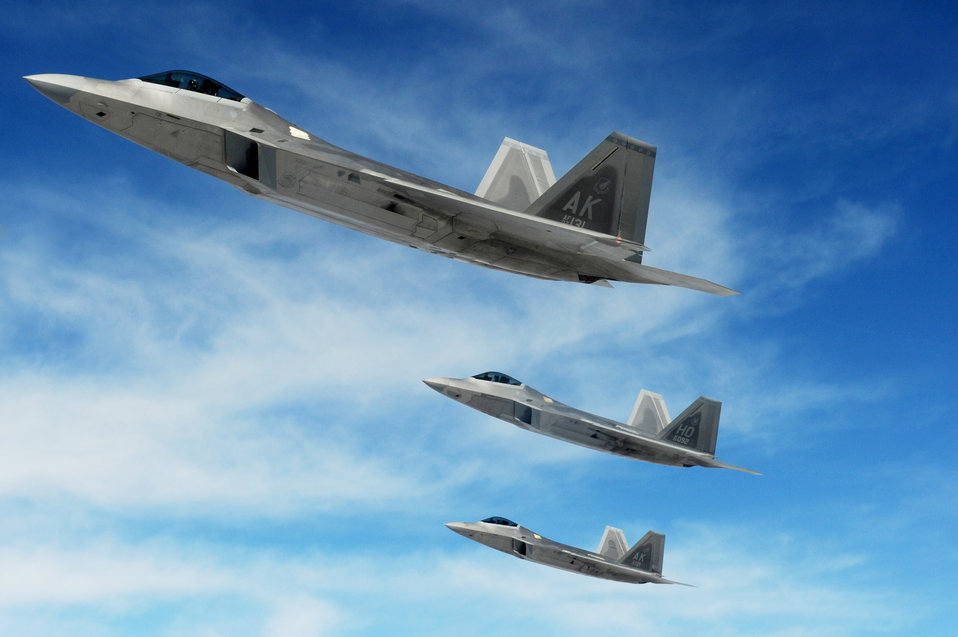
Raptors reign at Red Flag

A three-ship formation of F-22 Raptors flies to the Nevada Test and Training Range Feb. 4, 2010, during Red Flag. Red Flag is a realistic combat training exercise involving the air forces of the United States and its allies. The Raptors are from the 90th Fighter Squadron at Elmendorf Air Base, Alaska, and the 49th Fighter Wing at Holloman AFB, N.M.